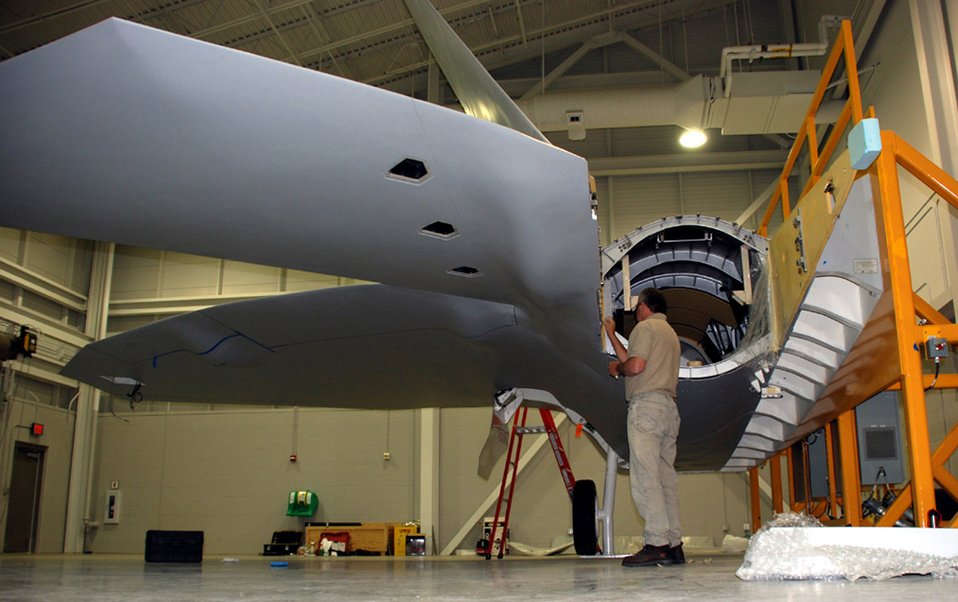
Raptor maintenance training 'ramps' up at Sheppard

Buddy Cash works on the engine section of the first F-22 Raptor fuselage trainer at the new Raptor Maintenance Facility at Sheppard Air Force Base, Texas, July 20. Mr. Cash is a master assembly mechanic with A.A.I. Services.